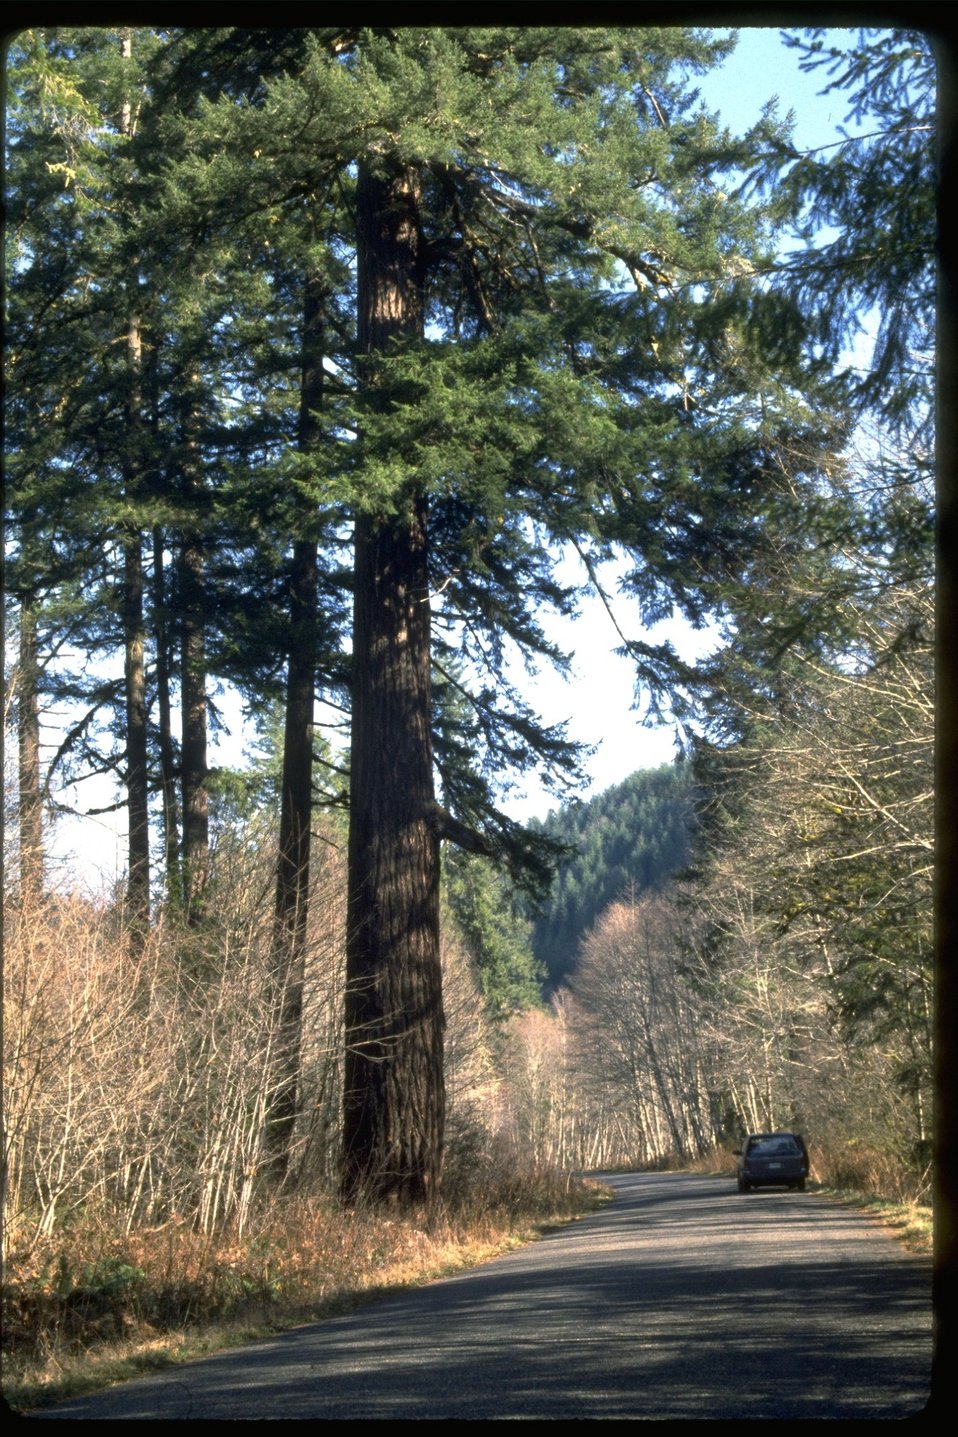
Carpenter Fir.